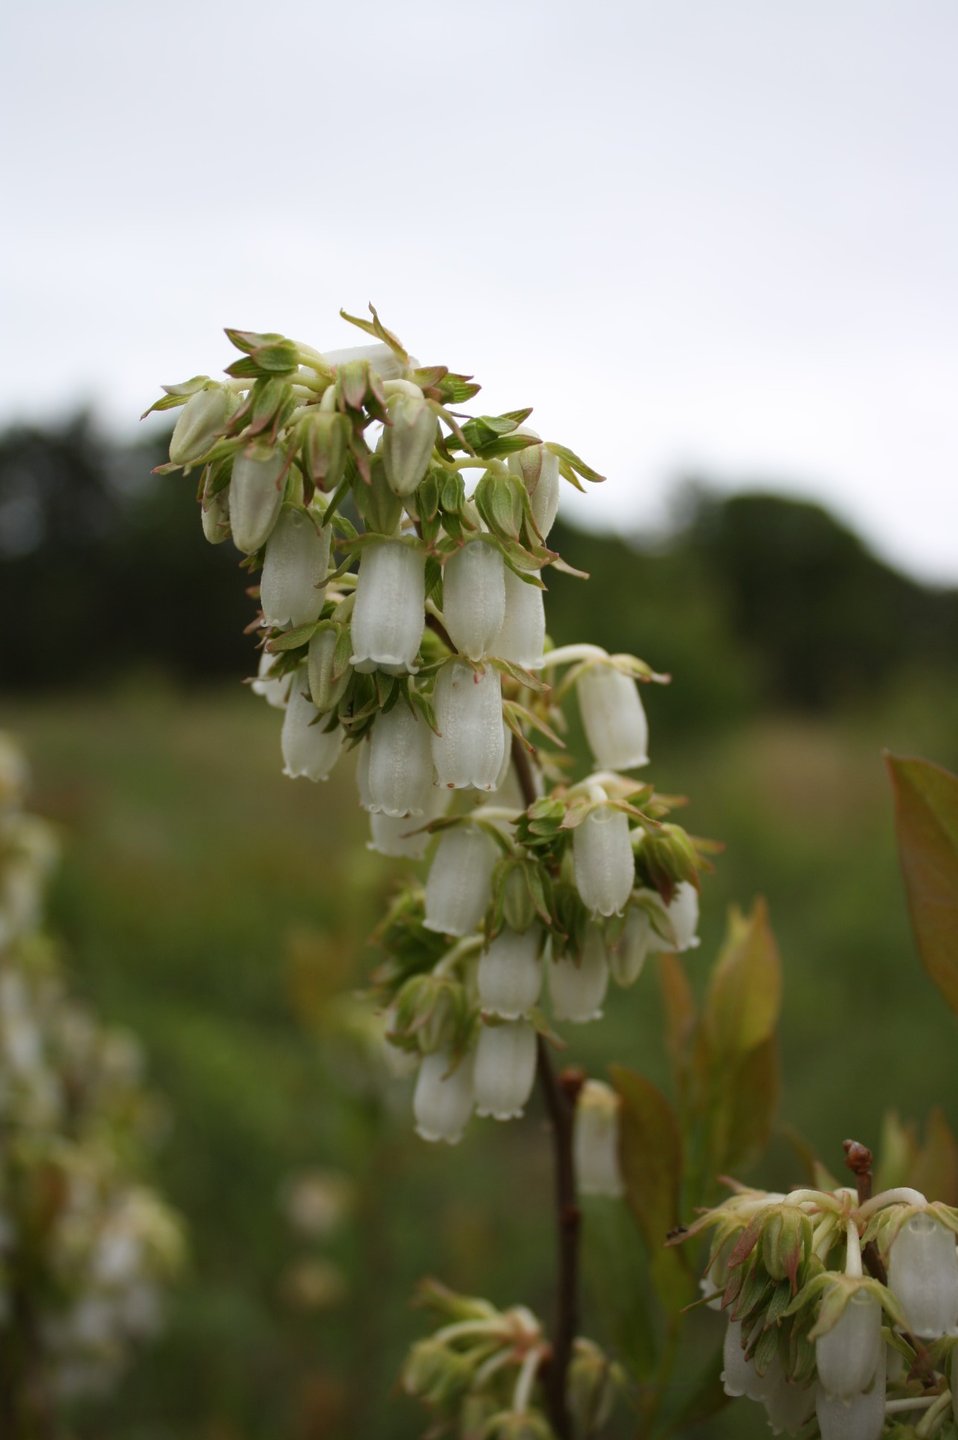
Low Bush Blueberry

Photographed at Wertheim National Wildlife Refuge.